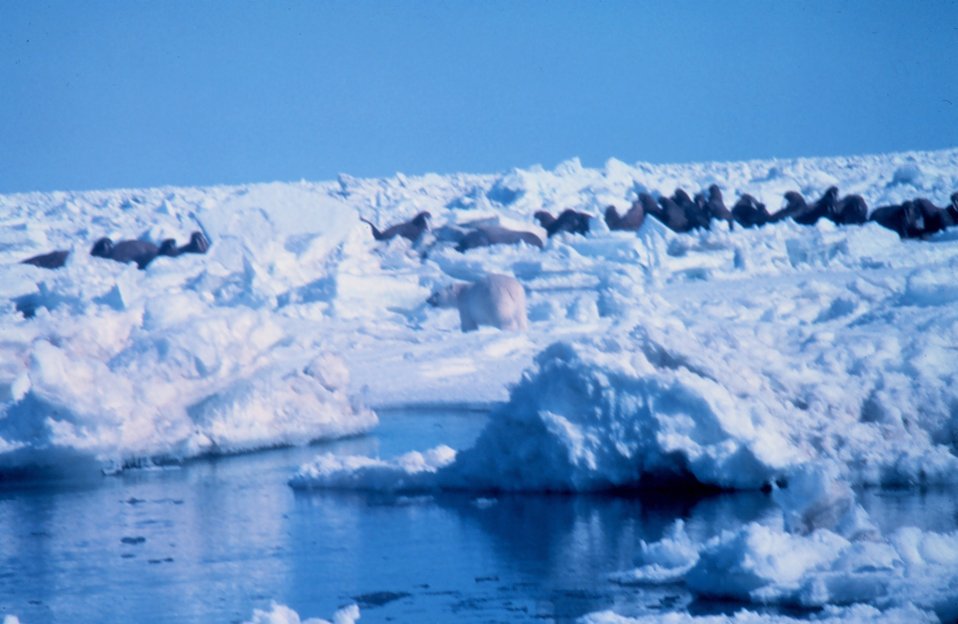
Polar bear - Ursus maritimus - hunting near large group of walrus. Polar bear normally won't attack walrus unless walrus is sick or very young.